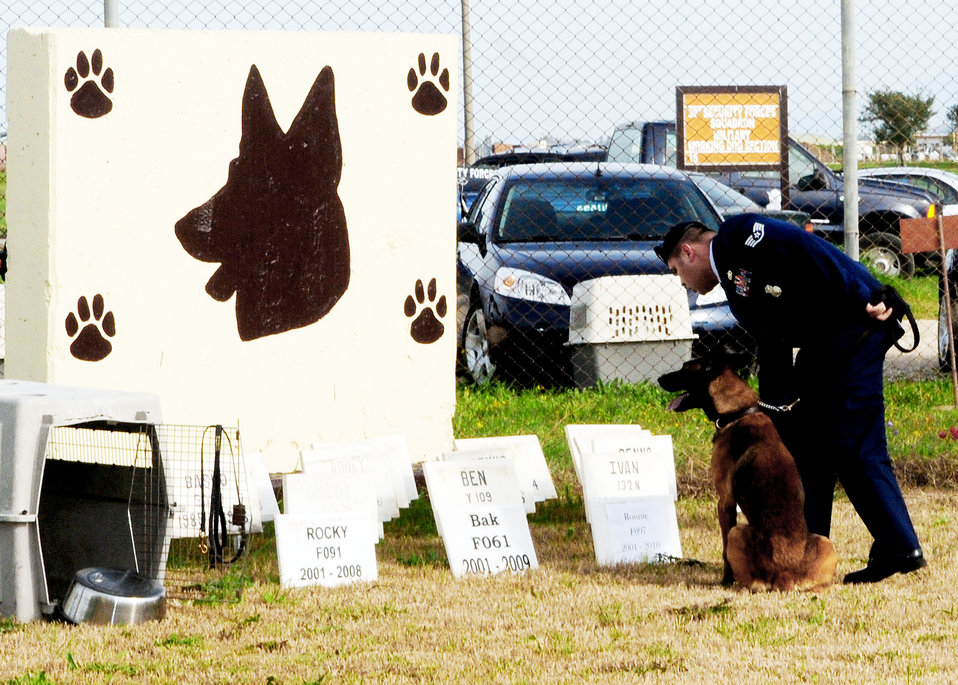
Incirlik members honor fallen SFS defender

Staff Sgt. Frederick Thiessen lays flowers in front of a plaque dedicated to Ronnie, a fallen 39th Security Forces Squadron military working dog, during his memorial ceremony Feb. 25, 2010, at Incirlik Air Base, Turkey. Sergeant Thiessen is a military working dog handler assigned to the 39th Security Forces Squadron.